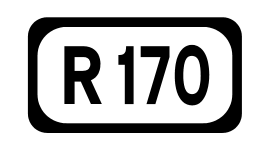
regional route shield 170 Ireland